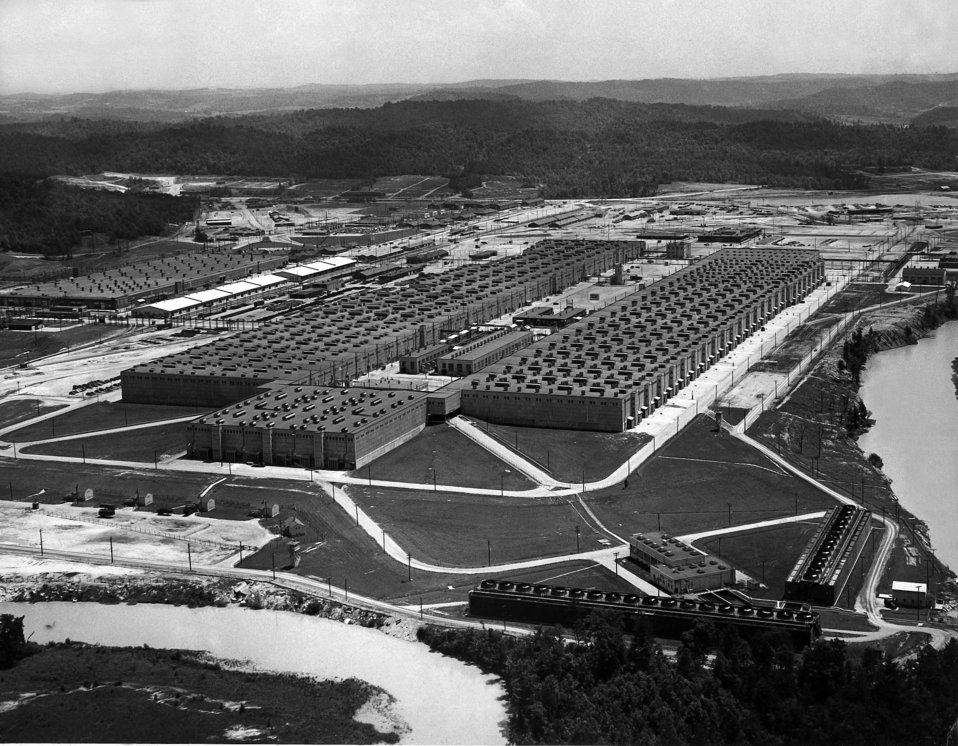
K-25 Air View Oak Ridge

pro 3503 DOE photo by Ed Westcott 1947 Oak Ridge Tennessee